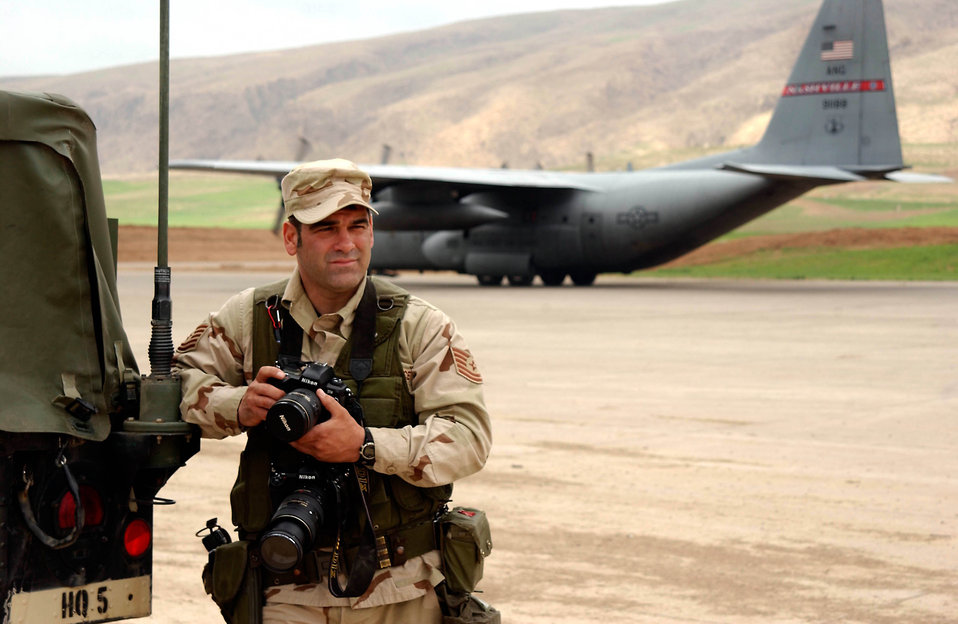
Picture this

OPERATION IRAQI FREEDOM -- Tech. Sgt. Steve Fausili -- on the flight line at Bashur Airfield, Iraq -- got a view of Iraq few airmen at this base have seen.